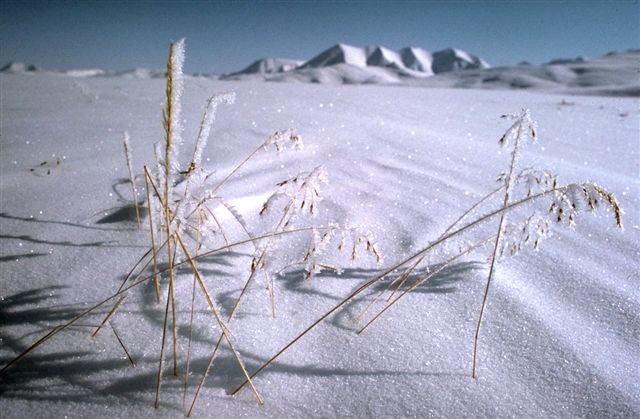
Winter ice, Arctic NWR

Ice coats a solitary winter landscape in the Arctic National Wildlife Refuge.